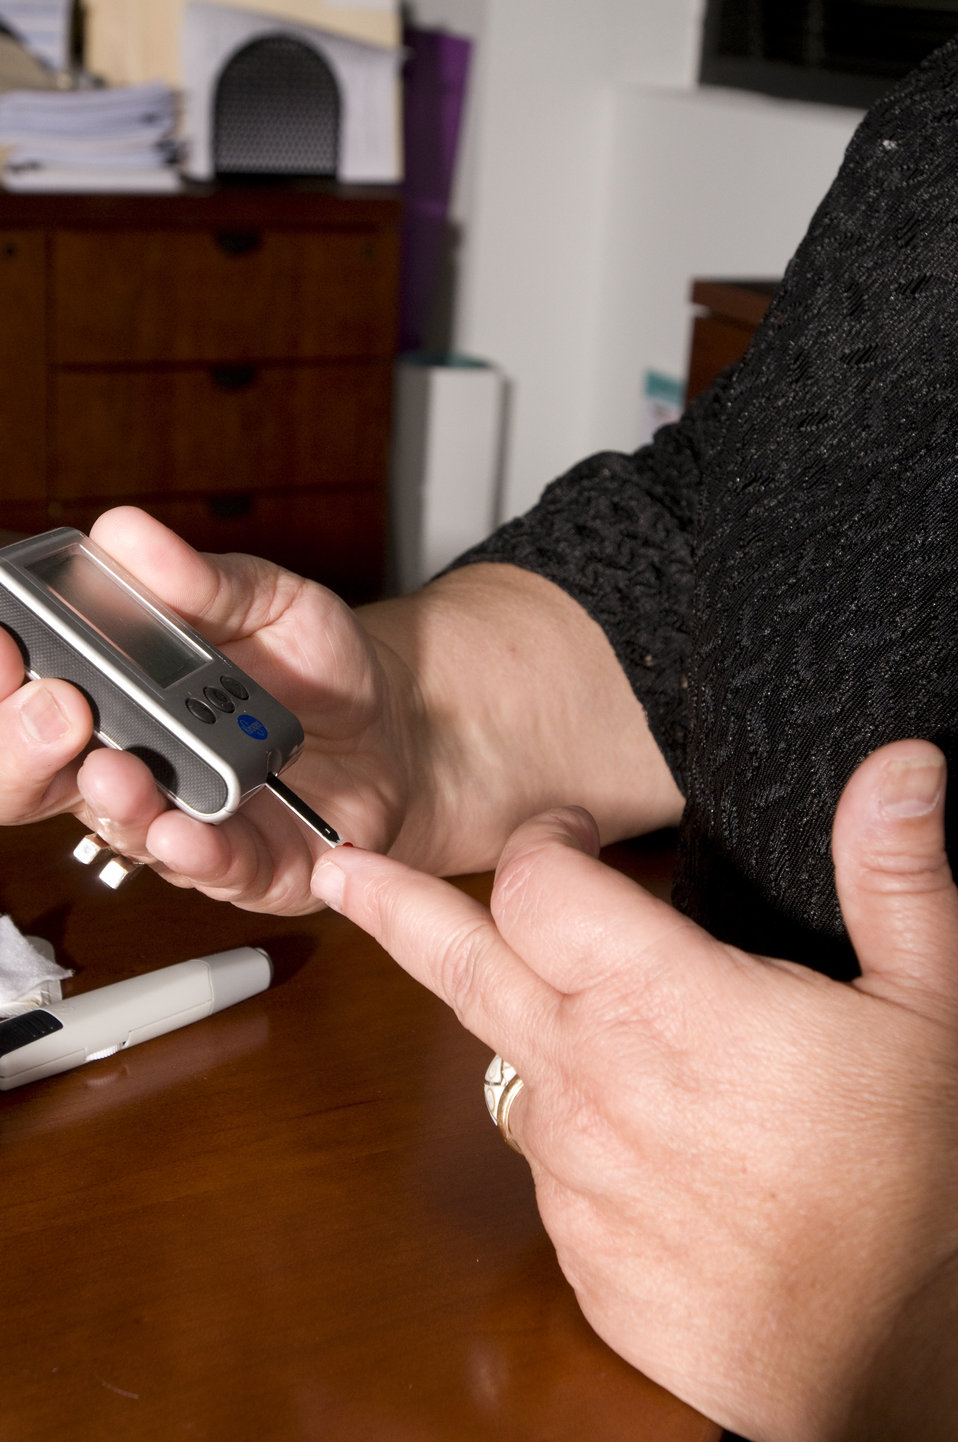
The woman pictured here, was about to check her blood glucose level. This process is known as self-monitoring blood glucose, and it's a way for people with diabetes to find out how much glucose is in their blood. A drop of blood from the fingertip is placed on a special coated strip of paper that 'reads' the amount of glucose in the blood. Many people use an electronic meter to get this reading. This stage of the procedure now required this patient to read her blood glucose level using an electronic glucose meter, which draws the blood up and into the device.